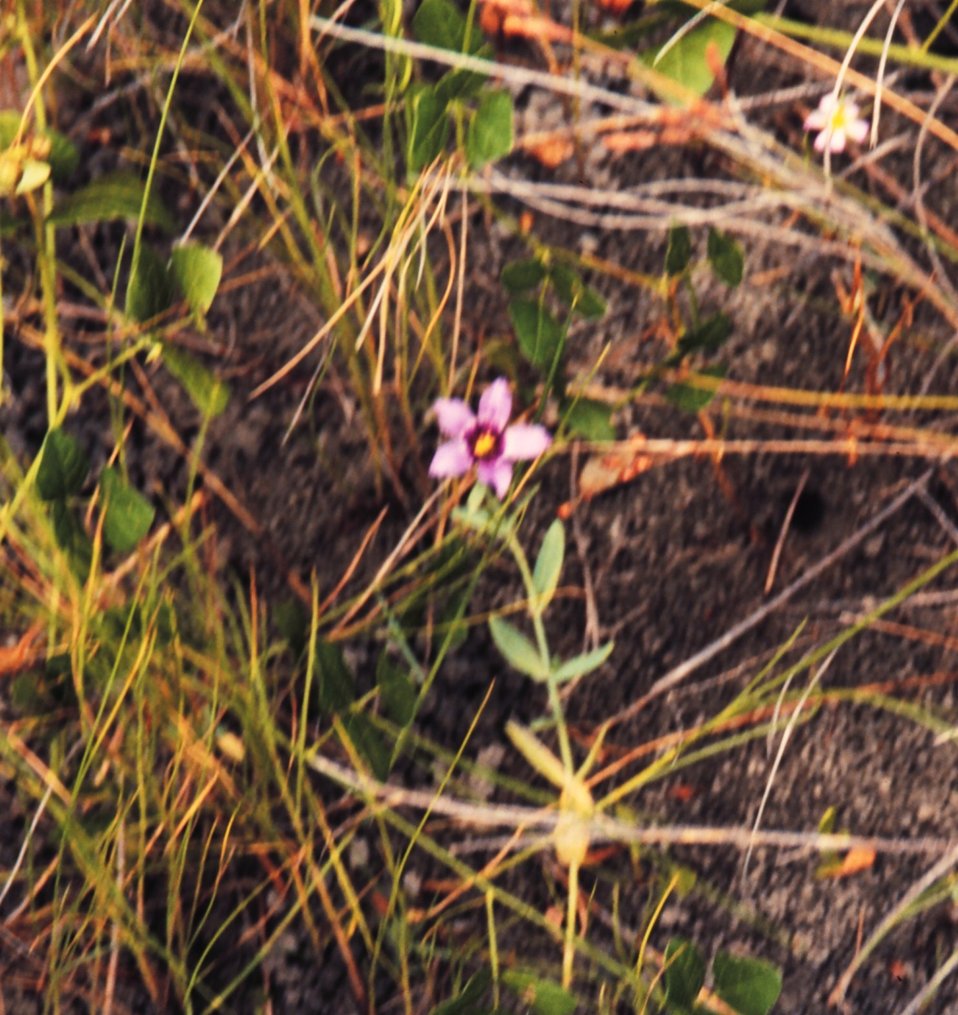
Delicate flowers are common within Louisiana coastal marshes.